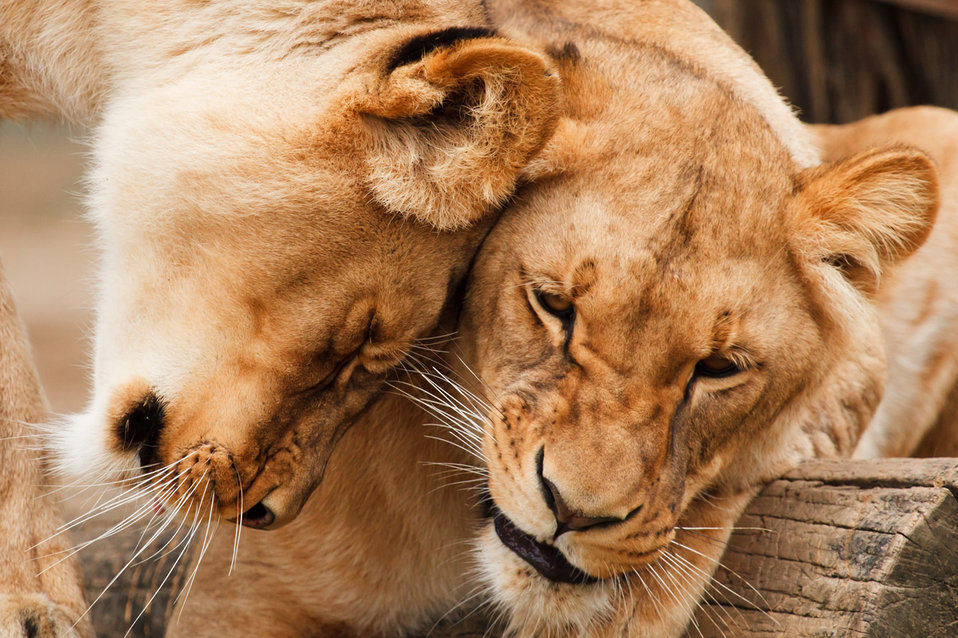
Cuddling lions

Two cuddling lionesses.